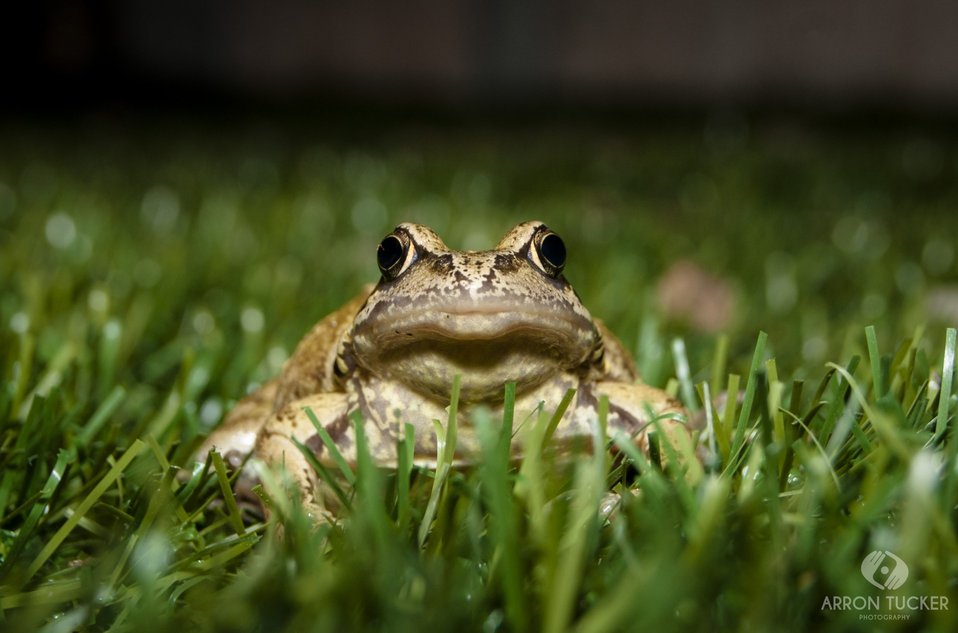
Mr toad

Watermarked version (non-watermarked available on request).